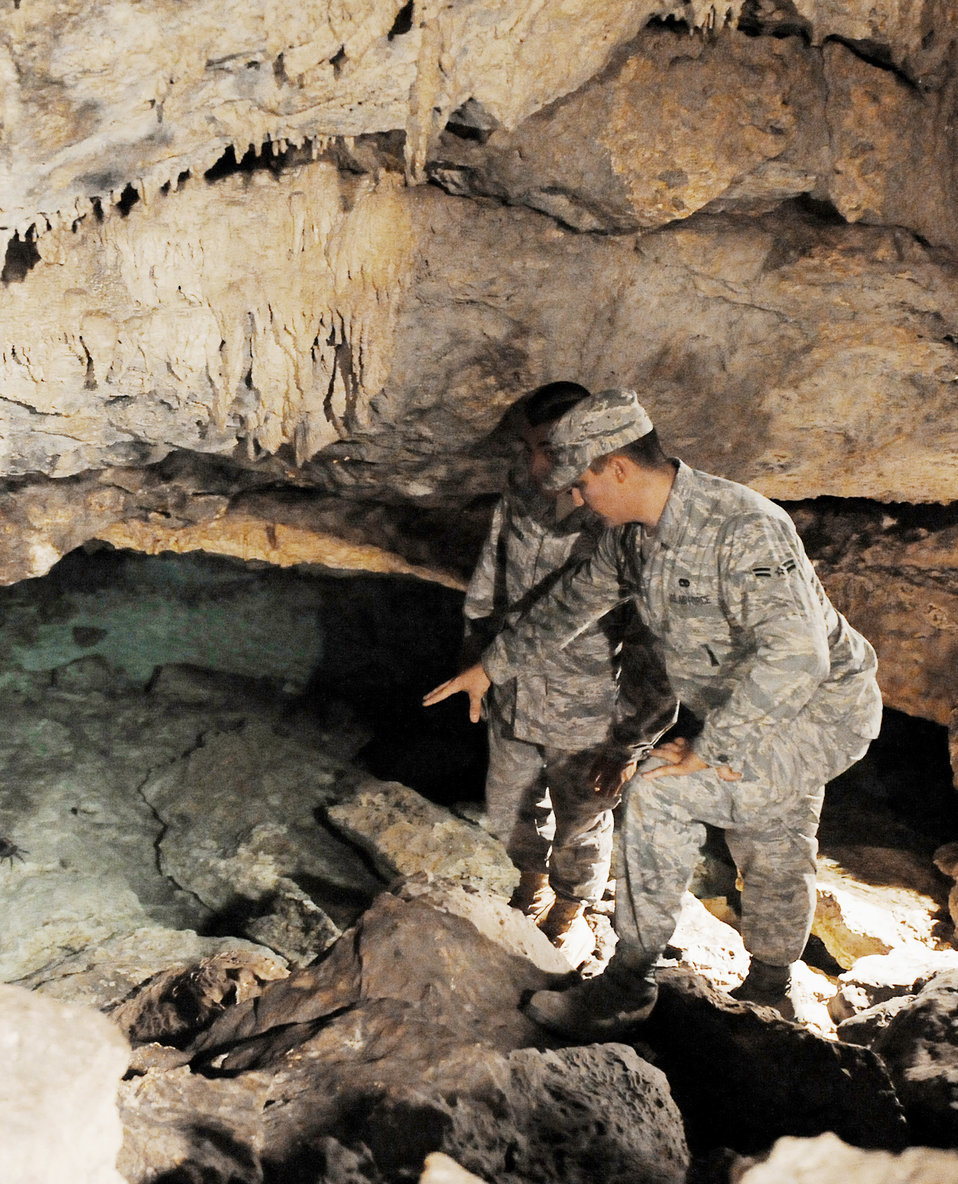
Airmen save local man's life, cite training

Airman 1st Class Kylle Krzywiecki shows the underwater cave he dove into to rescue a drowning man March 27, 2010, in Guam. Airman Krzywiecki, along with Airman 1st Class Mark Gregg and Airman 1st Class Caleb Rodriguez performed CPR and ran more than a mile through jungle and beach terrain to contact emergency services. The victim, Christensen Kimi from the island of Chuuk, survived and was released in good health from the hospital a day and a half later. Airman Krzywiecki, Gregg and Rodriguez are assigned to the 36th Munitions Squadron at Andersen Air Force Base, Guam.